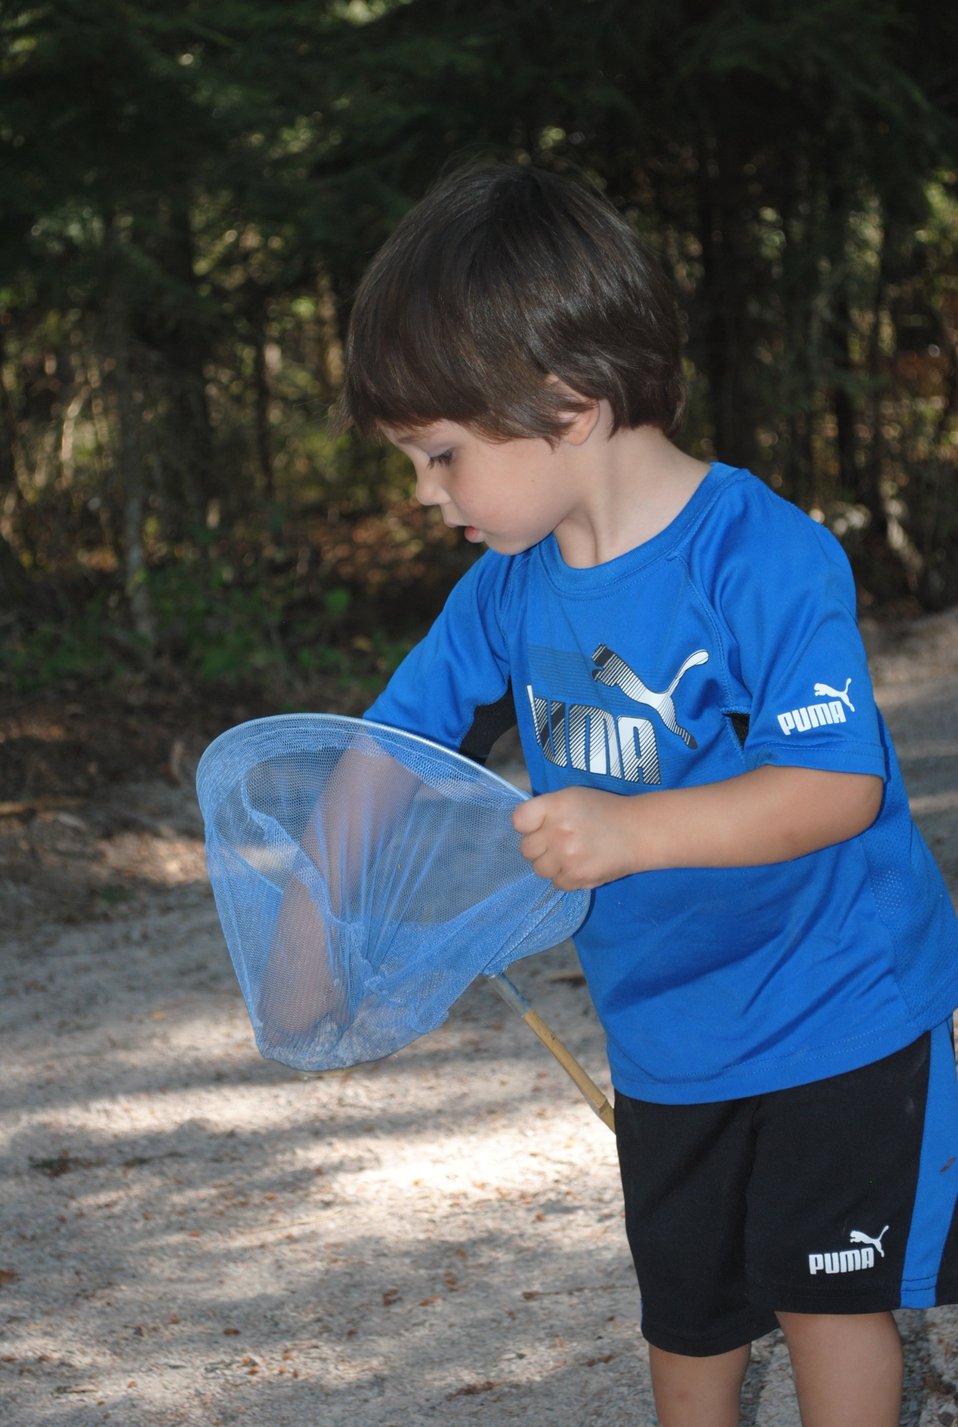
Creston National Fish Hatchery's Outdoor Classroom

A young child enjoys the new Outdoor Classroom at the Creston National Fish Hatchery.